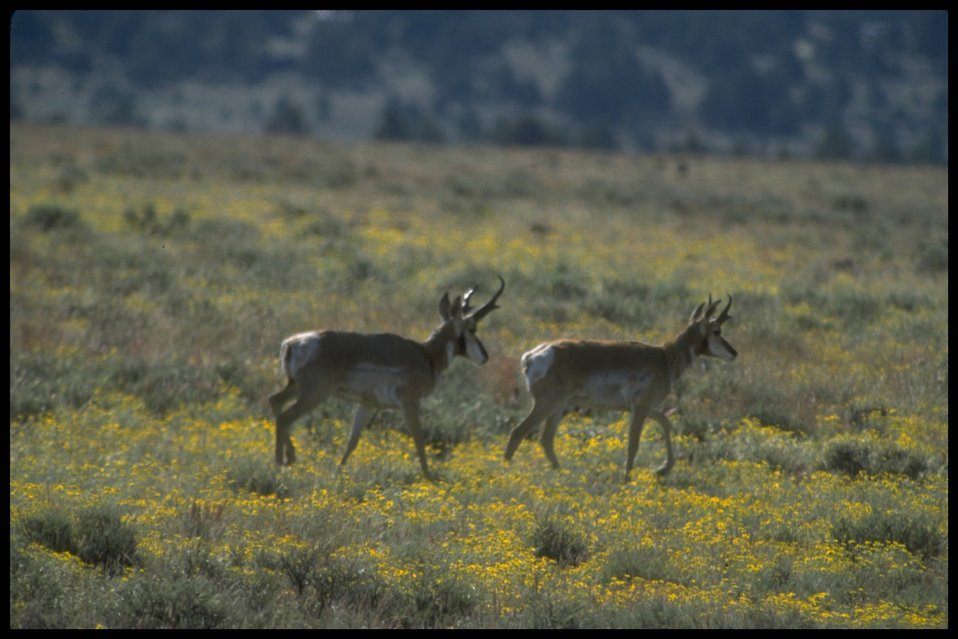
Antelope Bucks, Lakeview District.